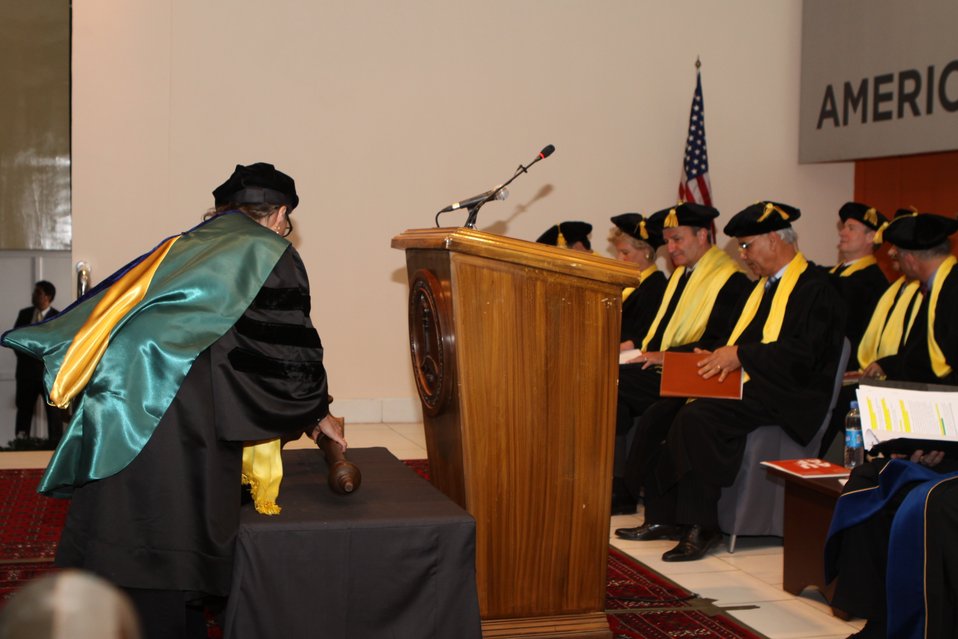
100526 AUAF Graduation 136